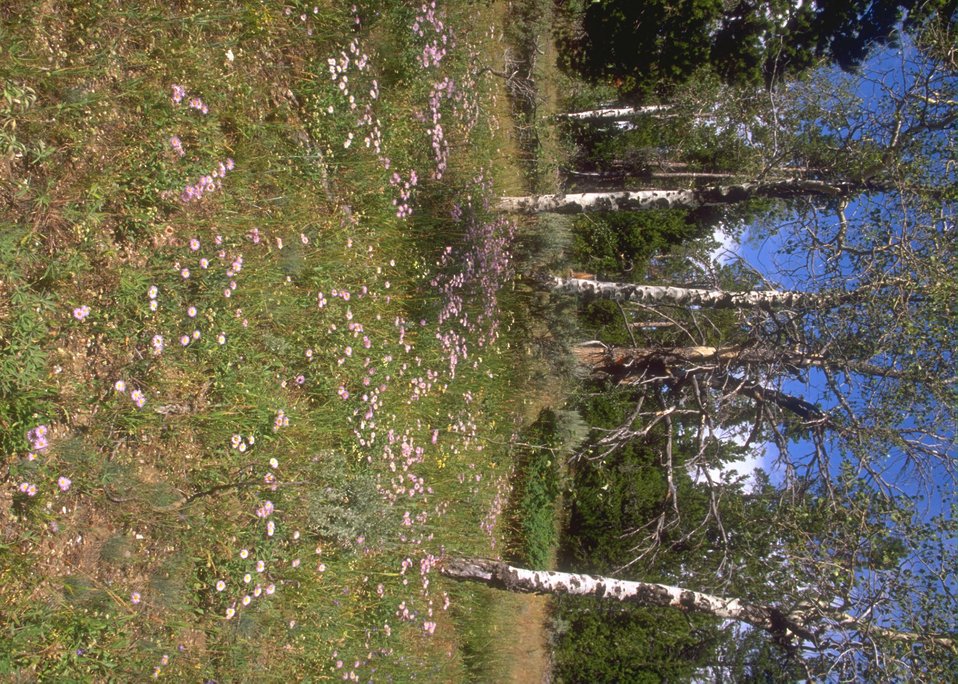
Flowers & aspen at Muddy Mountain Recreation Area, Casper Field Office.